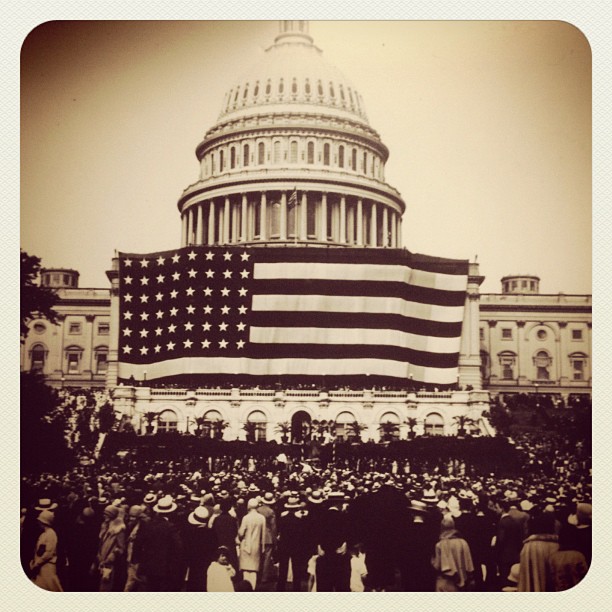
Happy Flag Day! First Flag Day at Capitol June 9, 1919, flag was largest in world at 90'x165'